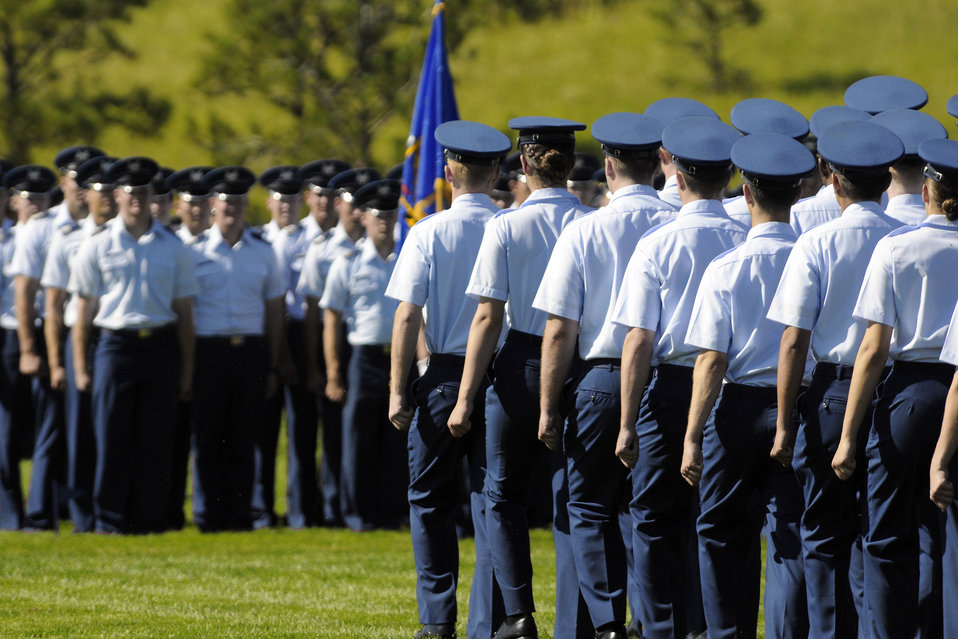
Academy acceptance parade

Members of the U.S. Air Force Academy's Class of 2013 join their upper classmen during the Acceptance Parade Aug. 5 at the Academy in Colorado. The parade marks the official end of Basic Cadet Training and formally welcomes the new class into the cadet wing.